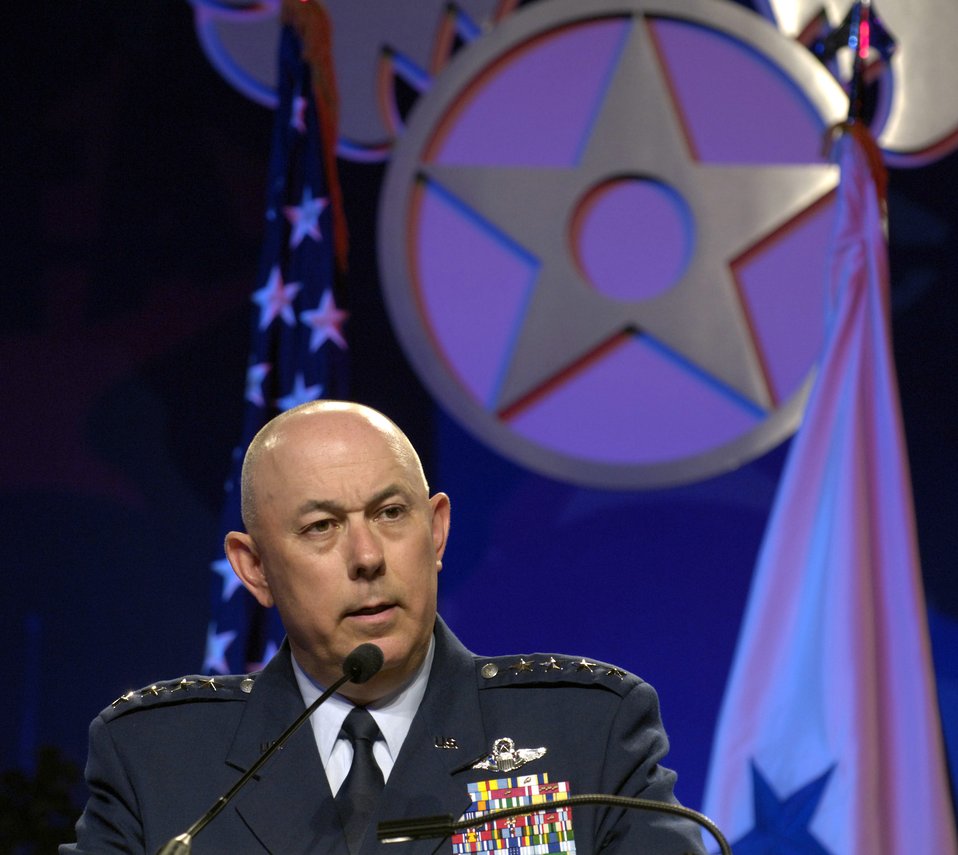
Moseley: Future of the Air Force

WASHINGTON -- Air Force Chief of Staff Gen. T. Michael Moseley gives his keynote address on the future of air and space power during the final day of the Air Force Association's 2005 Air and Space Conference and Technology Exposition here Sept. 14.